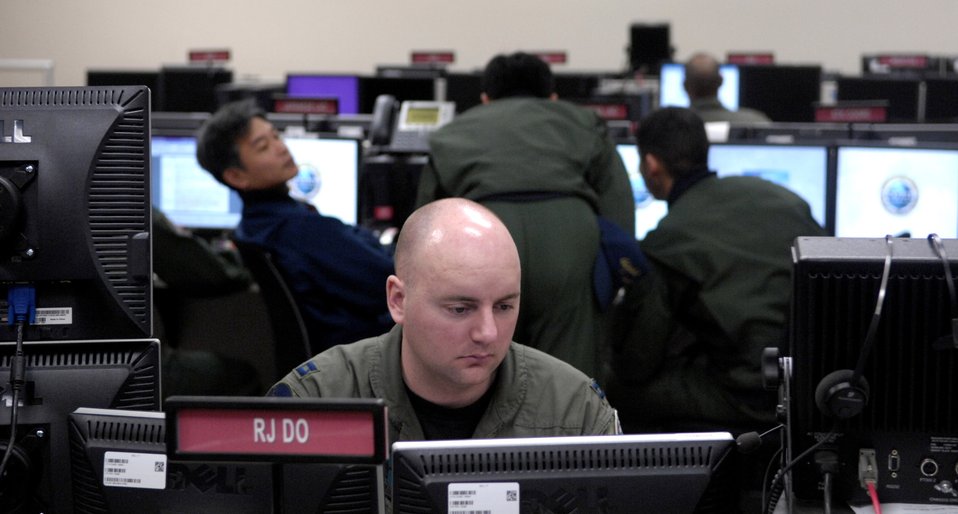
American, Japanese airmen join forces in Keen Edge '07

Capt. David Rogers coordinates air packages for time sensitive targets during Exercise Keen Edge '07 Feb. 2 at Hickam Air Force Base, Hawaii. Captain Rogers is assigned to the 50th Flying Training Squadron at Columbus AFB, Miss., and is an augmentee to the 613th Air Operation Center. Keen Edge is joint bilateral exercise to increase combat readiness and interoperability with the Japan Air Self Defense Force.